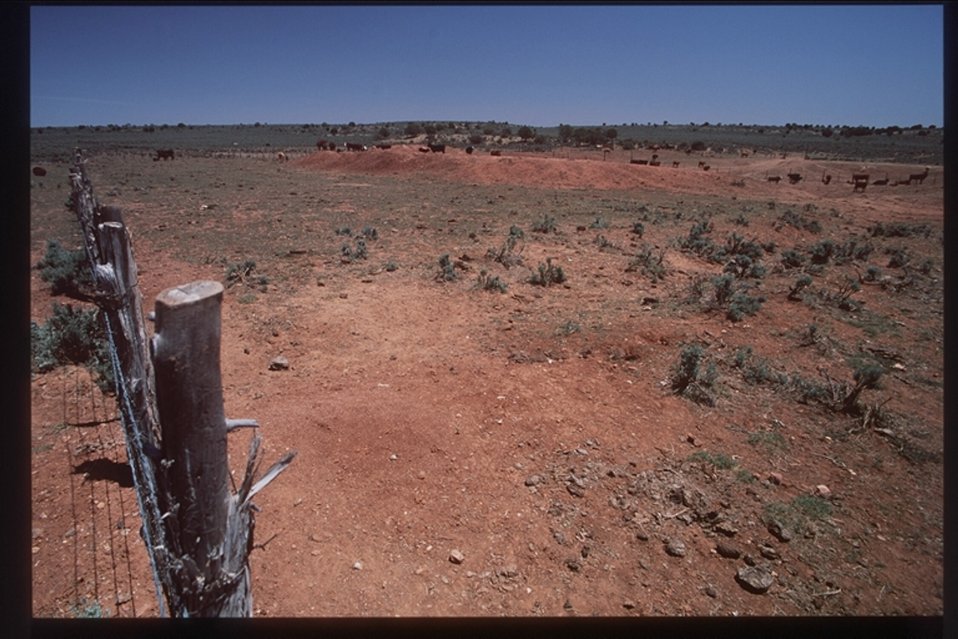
A flatter spot in the Grand Canyon-Parashant National Monument.